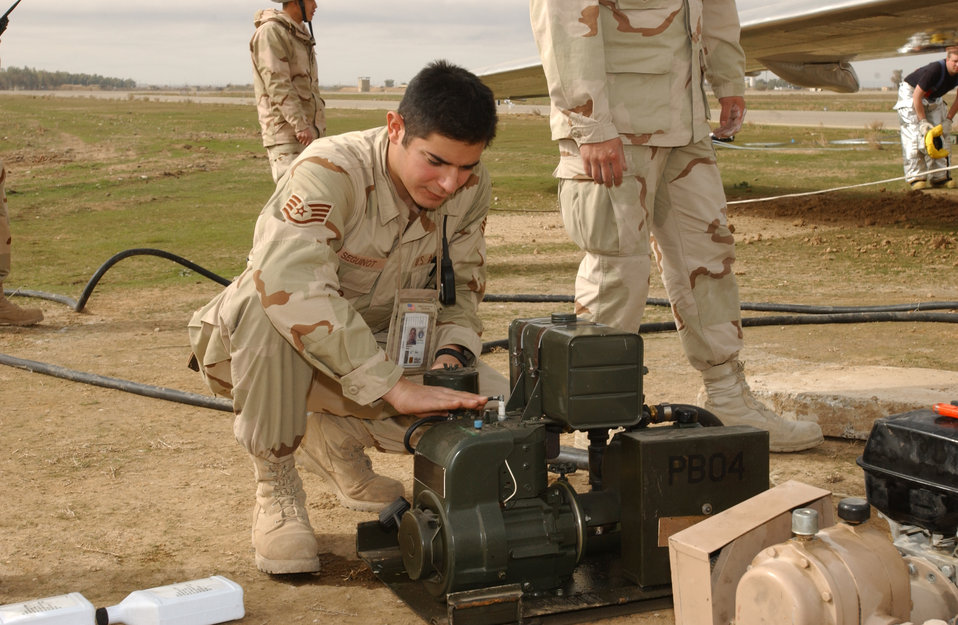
Stuck in the mud

KIRKUK AIR BASE, Iraq -- Staff Sgt. Victor Seguinot prepares to start an air compressor to fill airbags used to raise the wing of an aircraft mired in mud. The airbags are capable of lifting 12 tons of weight.